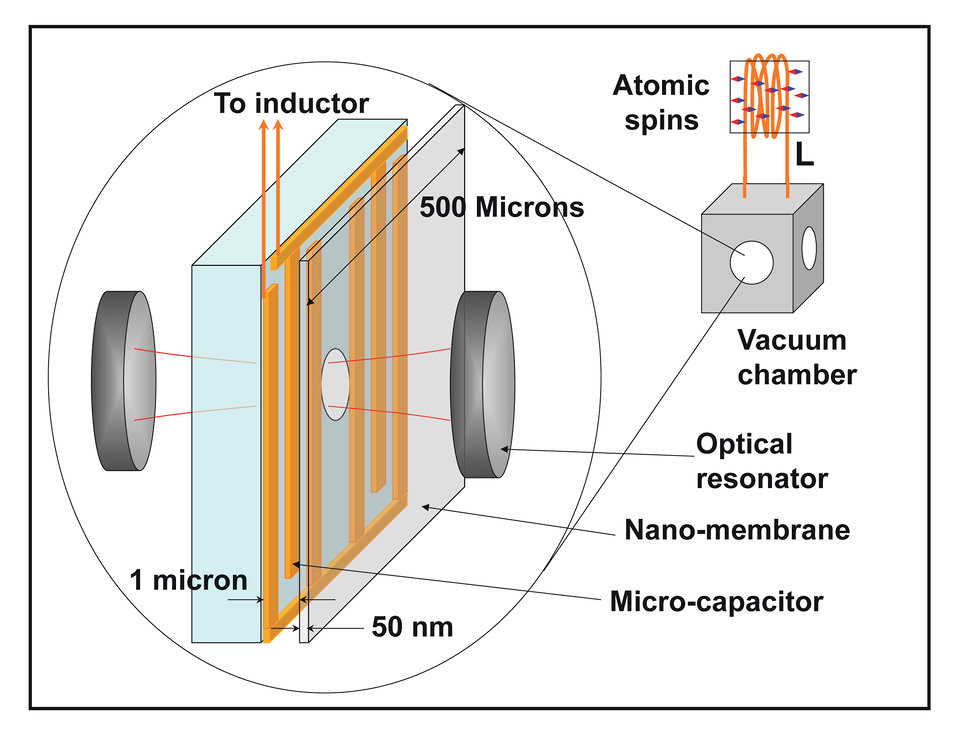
Loudspeaker

JQI researchers think they have discovered a way to amplify faint electrical signals using the motion of a nanomechanical membrane, or loudspeaker. If shown in experiments, the scheme could prove a boon to magnetic resonance imaging and quantum information science. This schematic of the proposed device shows its use in detecting--in this example--a signal produced by the quantum-mechanical 'spin' of a group of atoms. The atoms generate a faint radiofrequency signal in a coil (L) which is connected to microscale wires that form an electrical capacitor. This vibrates the 'nanomembrane' which in turn affects the resonant frequency of a laser optical cavity. The output is light at frequency that is the sum of the original laser frequency plus the signal from the atoms.